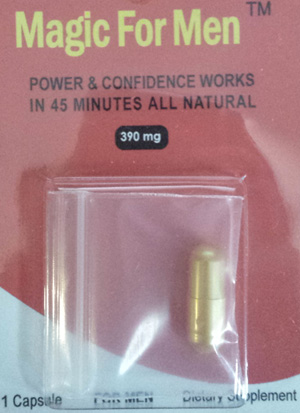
RECALLED – Dietary Supplement for Sexual Enhancement

January 9, 2014 – Product Recall – Midwest Wholesale Issues Voluntary Recall of Boost Ultra, XZone Gold, Sexy Monkey, Triple MiracleZen Platinum, Magic for Men, 'New' Extenze, and New XZen Platinum Marketed as a Dietary Supplements Due to the Presence of Undeclared Drug Ingredients. For additional information, please refer to the company issued press release available on FDA’s web site at www.fda.gov/Safety/Recalls/UCM381299.

And read this Consumer Update: Beware of Fraudulent ‘Dietary Supplements’